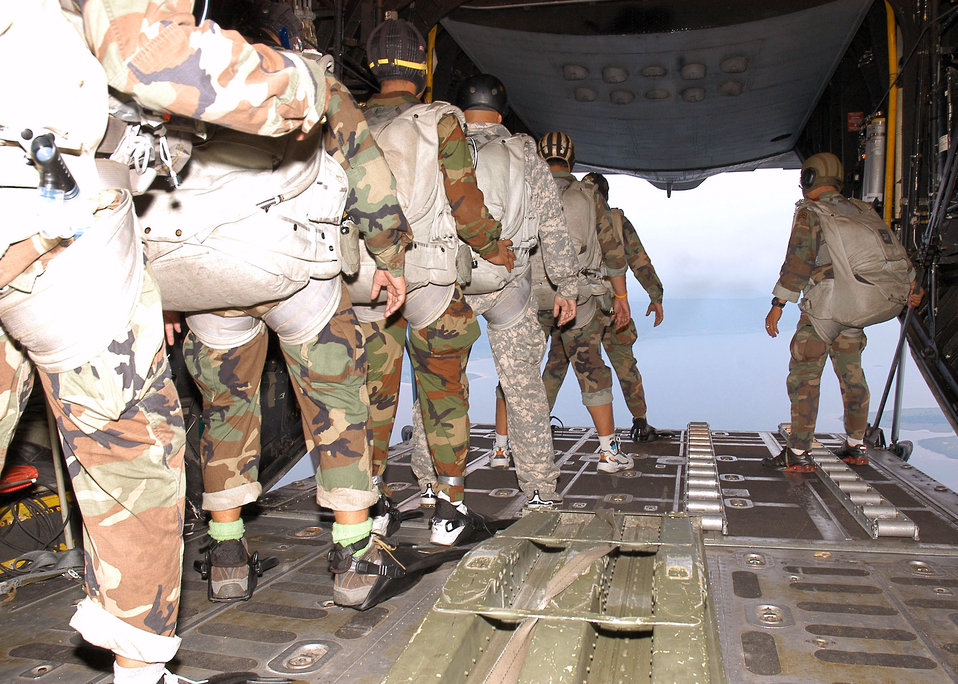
Thais, Americans join forces for Operation Teak Torch training

Special forces from the Royal Thai air force prepare to jump from an MC-130P Combat Shadow during Exercise Teak Torch at Udon Thani, Thailand. The Thai troops and 353rd Special Operations Group Airmen exercised together as part of Pacific Command's joint combined exchange training.